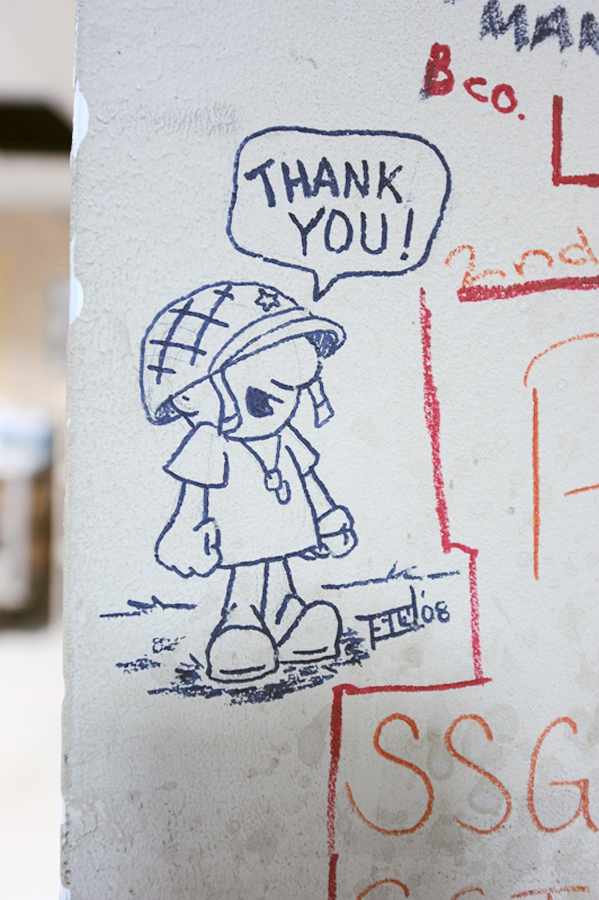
Theater hospital wall preserves memory, sacrifice

Names and messages are scribbled on the wounded warrior wall at the contingency aeromedical staging facility at Joint Base Balad, Iraq.